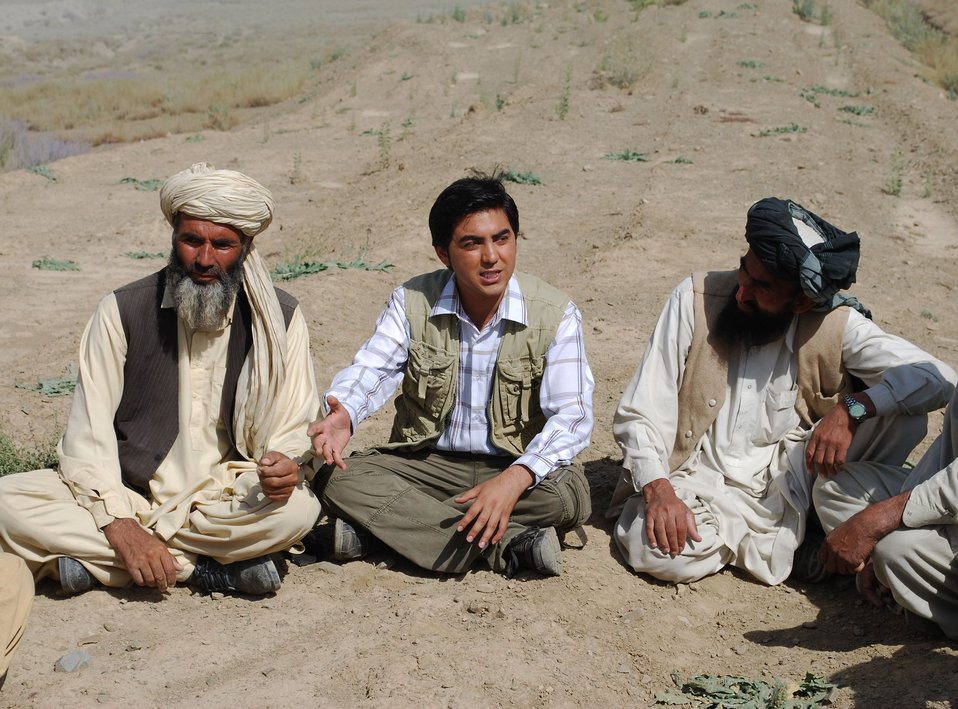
'On the Road' in Paktya Province